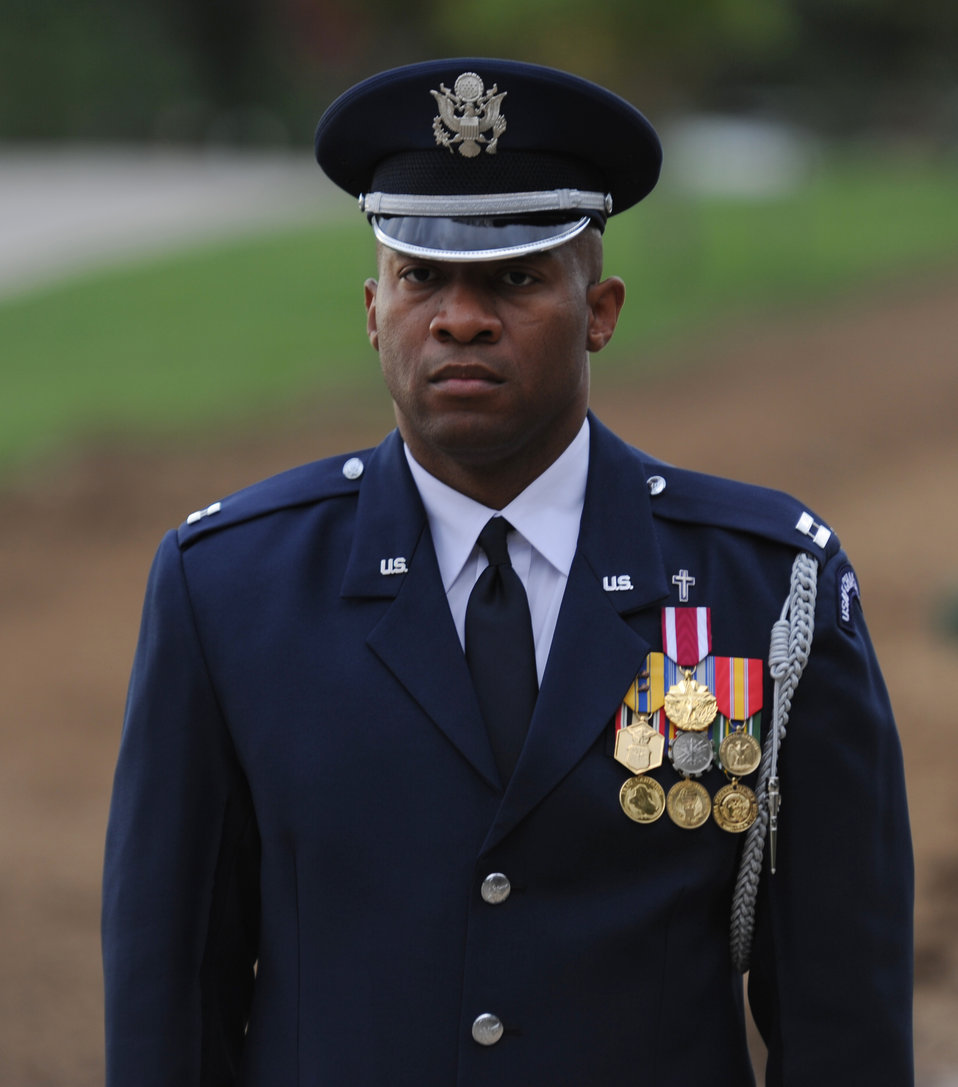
Air Force chaplain faces unique challenges

Chaplain (Capt.) Christian L. Williams is one of the chaplains representing the military services responsible for honoring those who are laid to rest at Arlington National Cemetery, Va. Another major role is to comfort and assist the families of those service members buried at the nation's largest national cemetery.